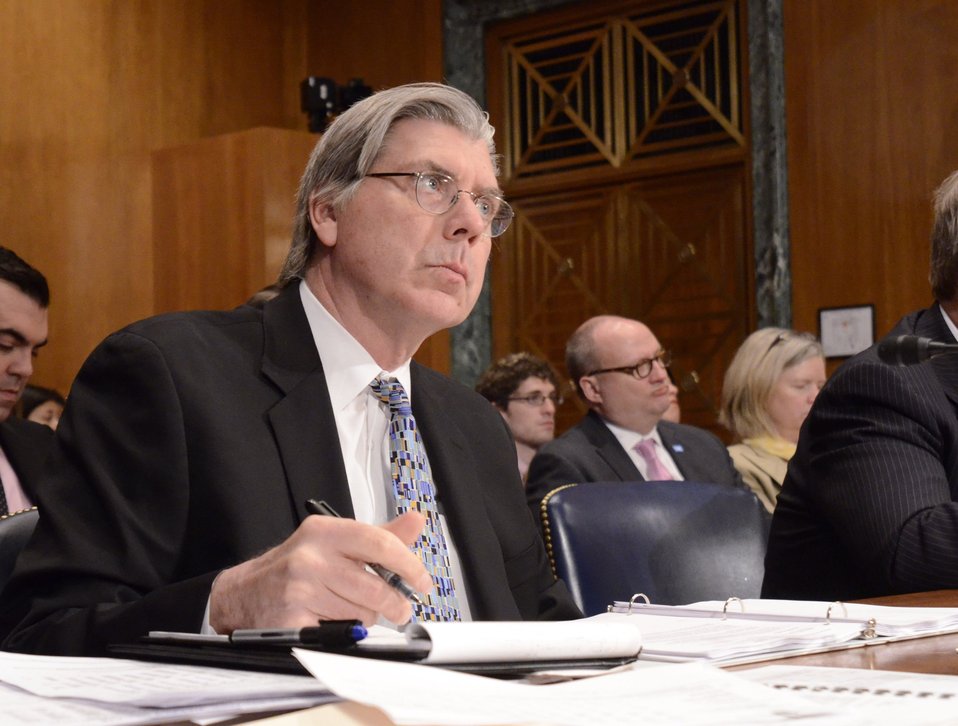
Agriculture Chief Economist Dr. Joseph Glauber testifies before the Senate Agriculture Appropriations Committee on the fiscal year 2013 budget at the Dirksen Senate Office Building in Washington, D.C. on Thursday, March 29, 2012.